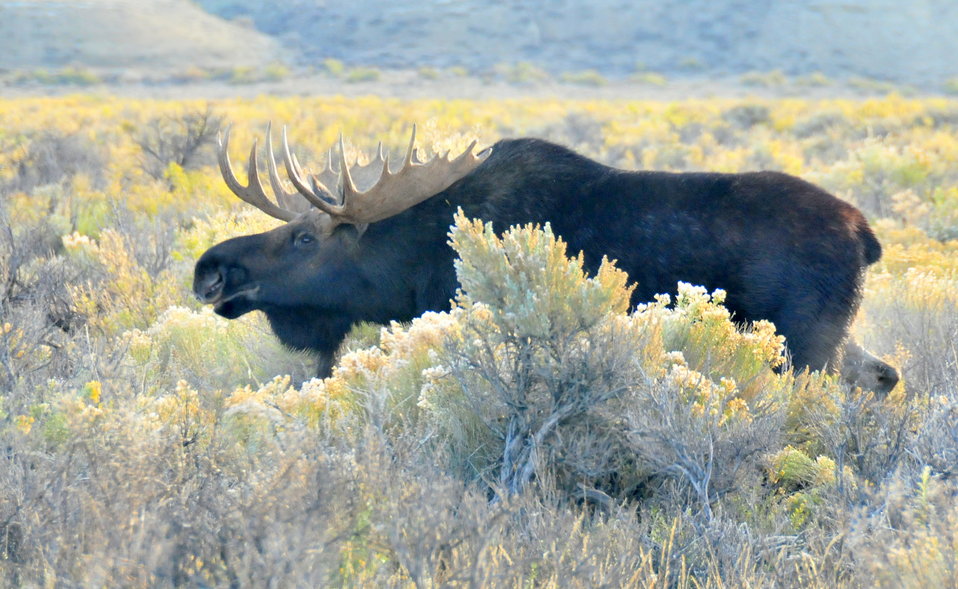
Bull moose during rut on Seedskadee NWR 1